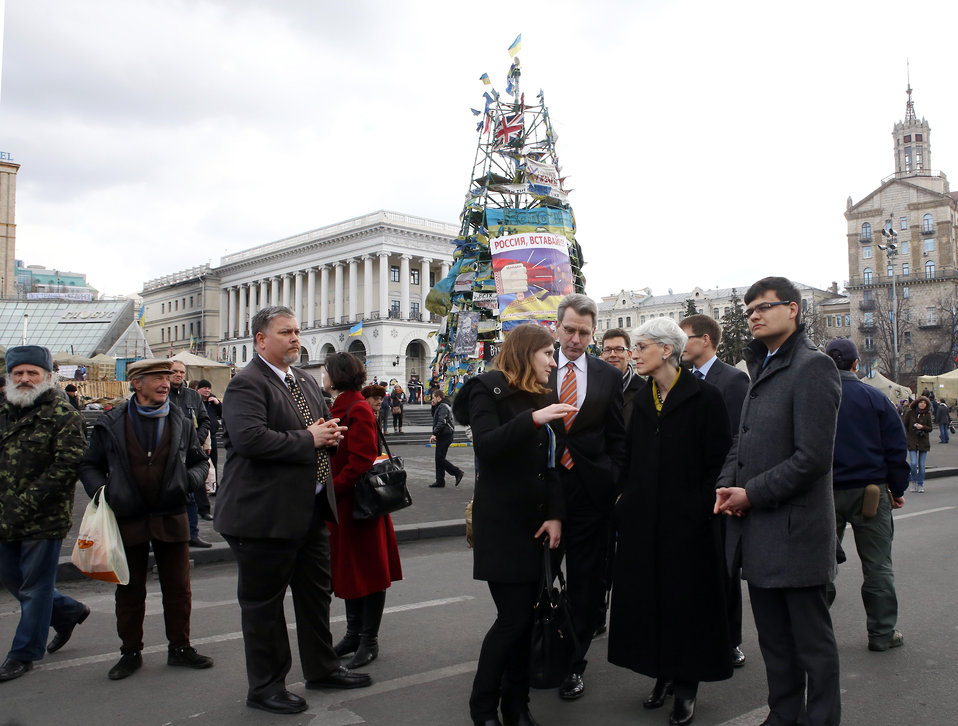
Under Secretary Sherman Meets With Civil Society Representatives in Kyiv

Under Secretary of State for Political Affairs Wendy Sherman and U.S. Ambassador to Ukraine Geoffrey Pyatt meet with representatives of civil society in Kyiv, Ukraine, on March 20, 2014.